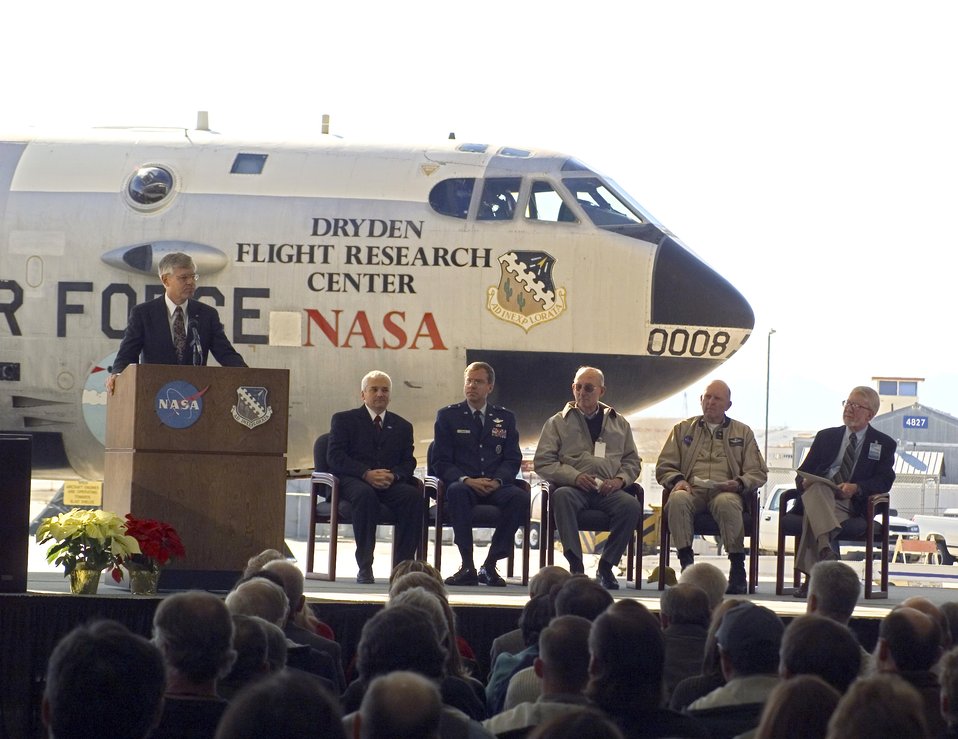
'Mothership' retires

EDWARDS AIR FORCE BASE, Calif. -- NASA's B-52B was officially retired during a ceremony here Dec. 17 after nearly 50 years of dropping advanced research vehicles. Attending the ceremony were (from left) retired NASA research pilot Ed Schneider; Kevin Petersen, NASA Dryden Flight Research Center director; Brig. Gen. Curtis Bedke, Air Force Flight Test Center commander; retired NASA pilot Fitz Fulton; current NASA pilot Gordon Fullerton; and AFFTC chief historian James Young.